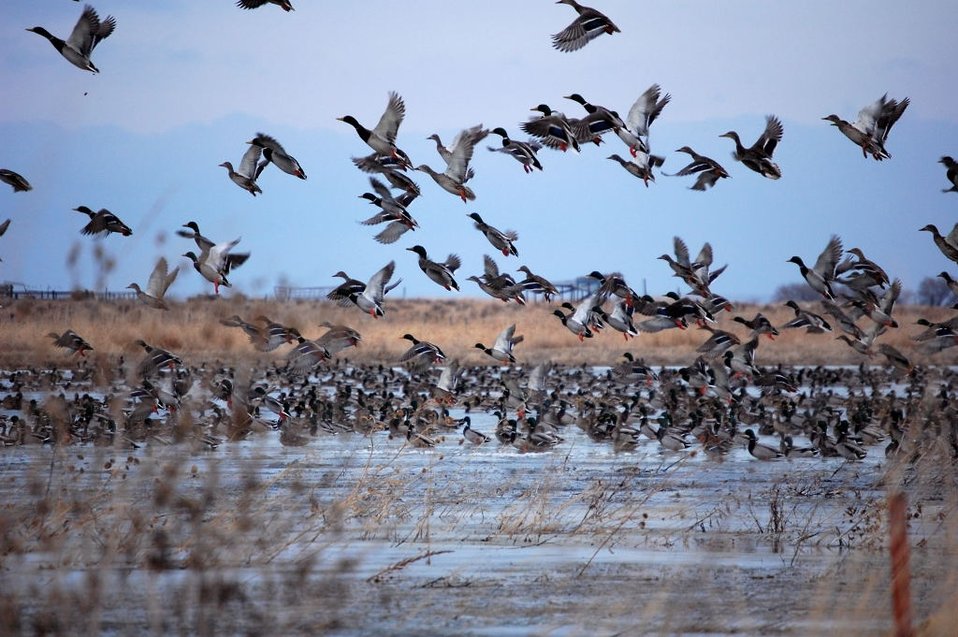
Mallards in the South Platte Area

Mallards in flight in the Partners for Fish and Wildlife (PFW) South Platte Focus Area in Colorado. In 2010, the Region 6 PFW program continued to focus on enhancing and restoring high quality wetland habitat for numerous Federal Trust species.